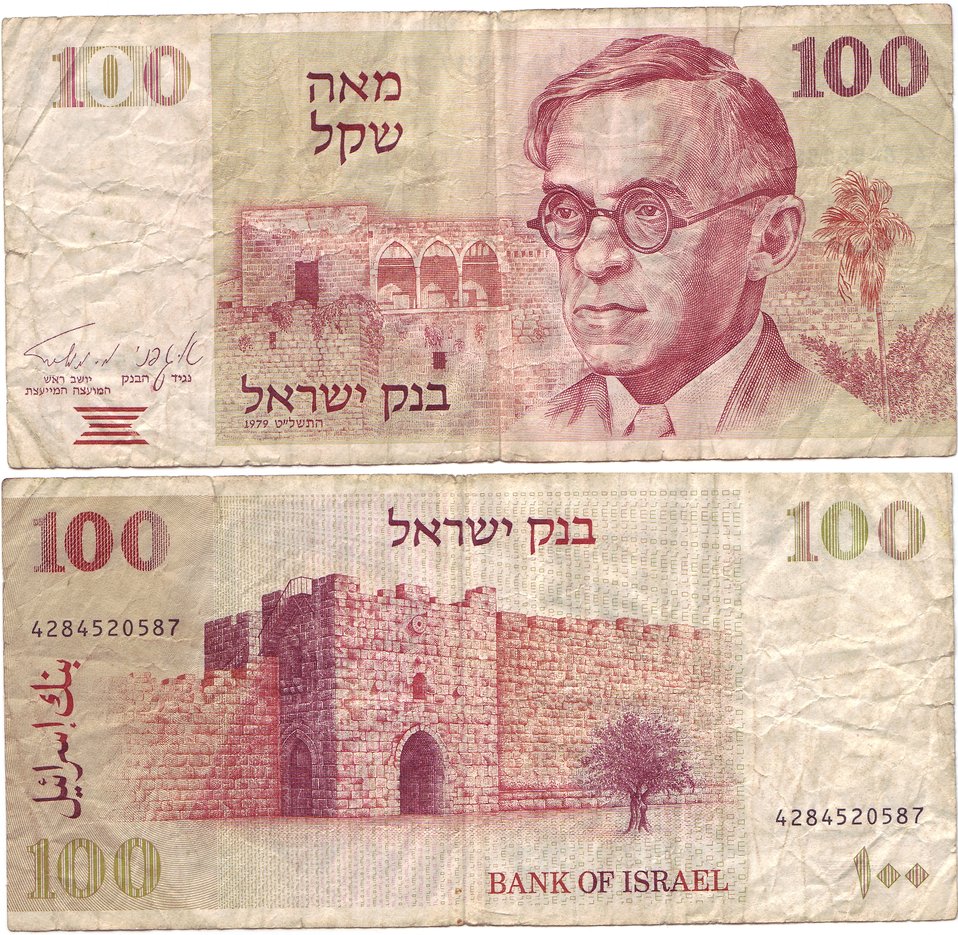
100 old Shekel bill dated 1979 התשל'ט Čeština: Stará bankovka o nominální hodnotě 100 šekelů, na jejíž aversní straně je zobrazen Vladimir Žabotinský.